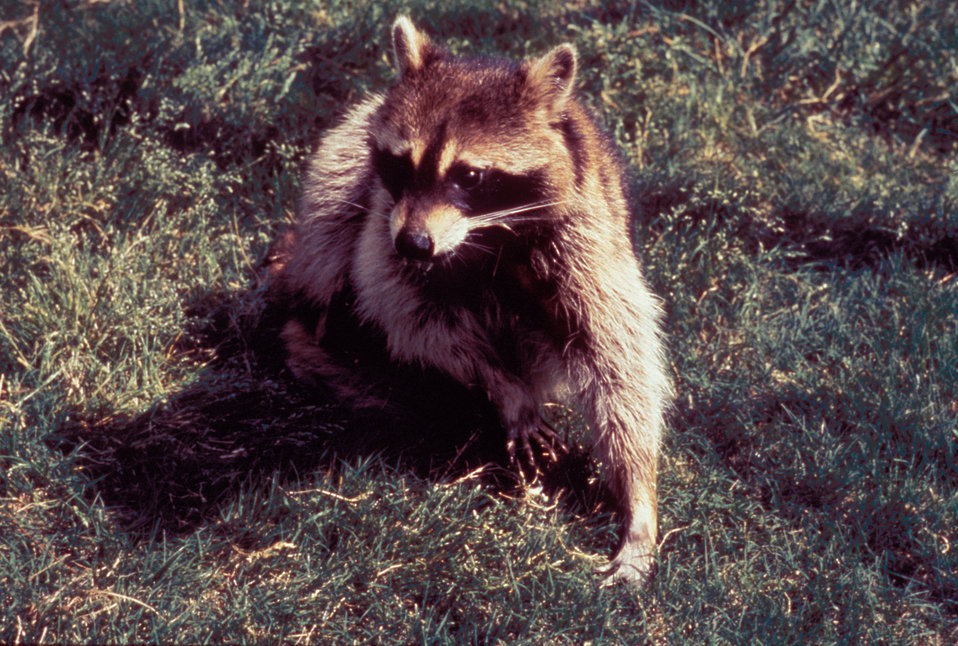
Raccoons can also be vectors of the rabies virus, transmitting the virus to humans and other animals.